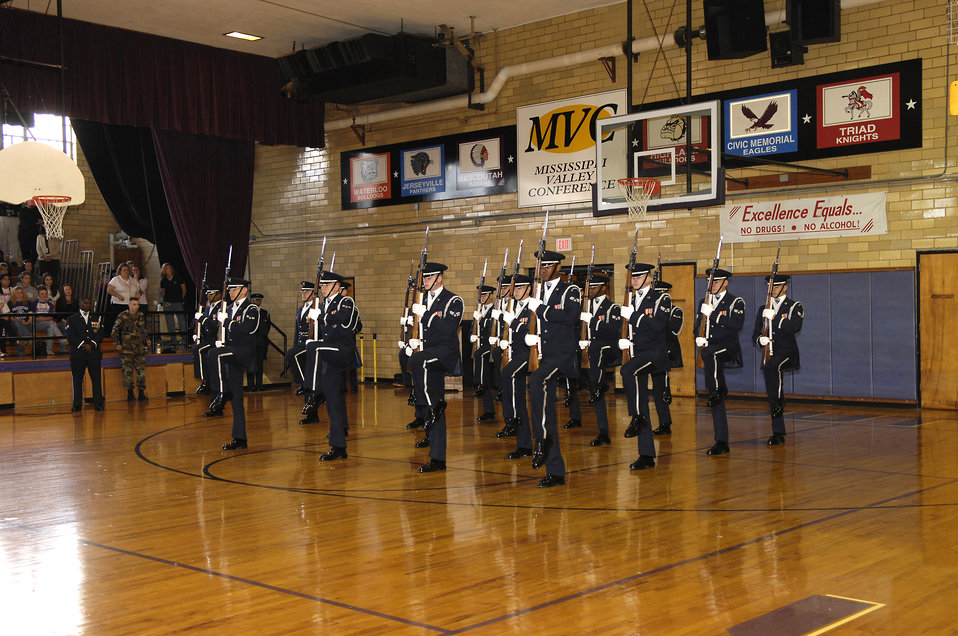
Airman inspiration

The U.S. Air Force Honor Guard Drill Team performed for students Dec. 12 at Mascoutah High School in Mascoutah, Ill. The Drill Team travels stateside and abroad performing drills for public and military audiences to recruit and inspire current and future Airmen.